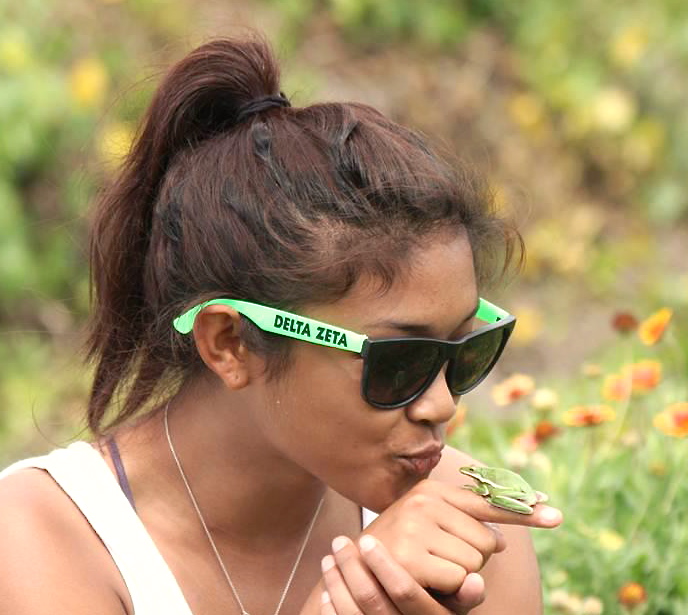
frog and friend

An Alternative Spring Break volunteer makes a new friend.
Pelican Island National Wildlife Refuge, FL
March 2012